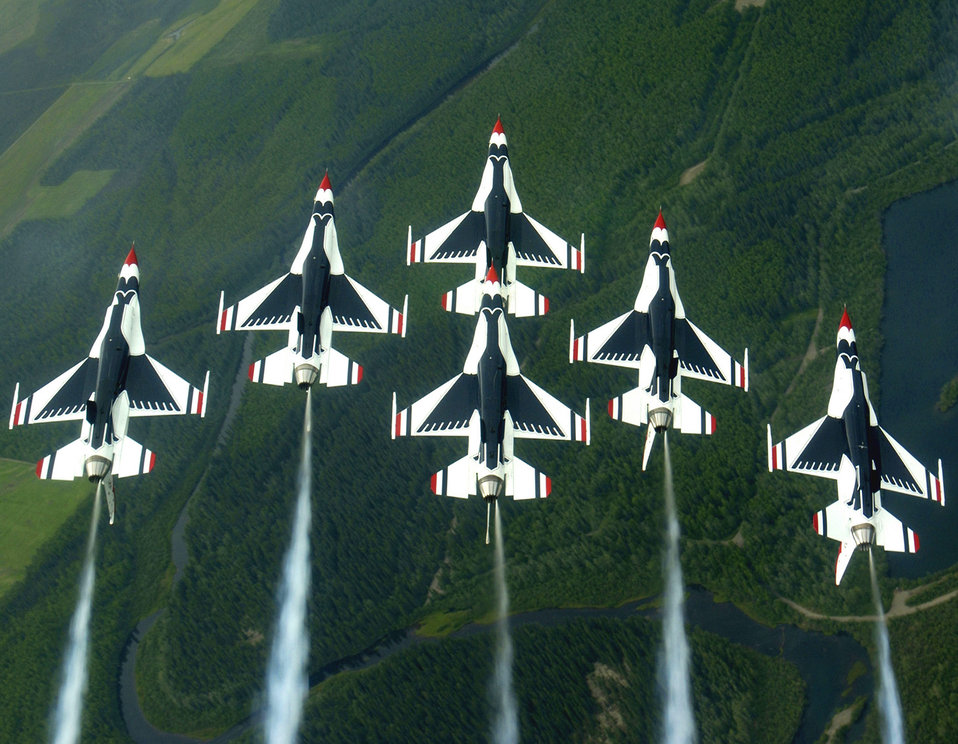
Delta formation

EIELSON AIR FORCE BASE, Alaska -- The Thunderbirds aerial demonstration team performs a loop while in the famous Delta formation here. The Thunderbirds fly the F-16 Fighting Falcon, a fighter that is highly maneuverable and has a proven record in combat.